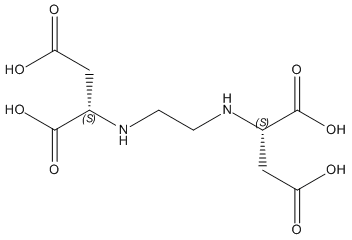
Molecular structure of (S,S)-EDDS